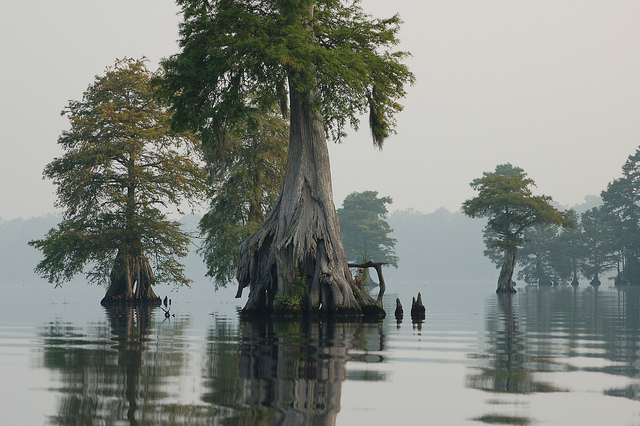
cypress in the mist

Great Dismal Swamp National Wildlife Refuge, VA/NC